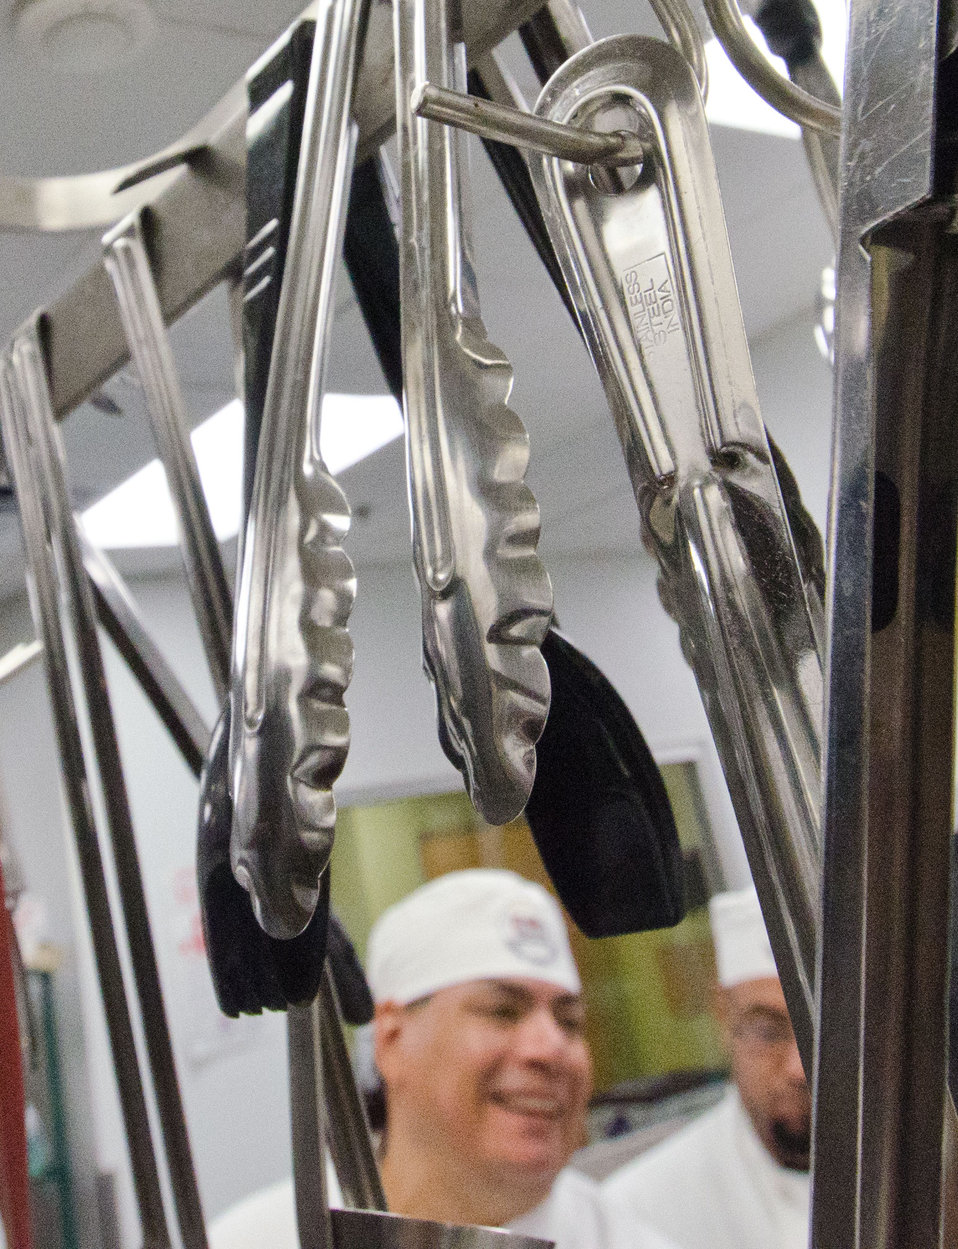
Tools of the culinary trade are clean and ready for use by student chefs Ed Rivas (left) and David Rodriguez (right) at San Antonio Food Bank (SAFB) Community Kitchen in San Antonio, TX, on Monday, October 31, 2011. The Community Kitchen trains the unemployed, feeds the hungry, and generates public support and revenue through social enterprise. Their classroom is seen in the background. Along with catering services, they also prepare meals for the U.S. Department of Agriculture (USDA) Summer Food Service Program feeding children during summer months, and the year-round Child and Adult Care Feeding Program (CACFP). They began creating meals in 2003, with volunteers and the Community Kitchen students looking to further themselves in a promising culinary career. Over the 16-week course individuals receive basic culinary training, similar to portions of an accredited culinary institution, to develop their culinary job skills. The program is lead by Chef Rudy Garza and his team of instructor chefs, present training and work demands that build useful job skills. The students focus their new talents on the preparation of meals for area shelters, kids cafes, summer feeding sites (www.summerfood.usda.gov/), and catering services. San Antonio Food Bank is a non-profit organization that serves as a clearinghouse by receiving and storing truckloads of donated food, produce, and other grocery. SAFB distribute these items to over 500 service agencies that help people in need.
“We couldn’t do what we do without our partnership with USDA’” said President and CEO Eric Cooper. He continues, “We are privileged in partnering (with the USDA) to feeding kids, through the summer, with the Summer Food Service Program, and throughout the year, with the Child and Adult Care Feeding Program (CACFP). Then in our approach to feeding seniors, we partner with USDA in the Commodities Supplemental Food Program (CSFP), and the Senior Farmer’s Market (Nutrition) Program. And then work to bring all our (needy) parties together with our Supplemental Nutrition Assistance Program (SNAP) Outreach. You know, once families have access to food we believe it is important to educate them. Through the support of the SNAP-Education Program we are able to educate them during their time of need. With this comprehensive approach we are really able to get the right food, at the right amount, at the right time, to needy families throughout our community – which allows us to feed the fifty-eight thousand we do, each week.”
SAFB serves 16 counties in Southwest Texas and states, “Nearly one out of every four children and one out of every five adults in Southwest Texas lives in poverty and has difficulty meeting basic nutritional needs.” According to SAFB, sixty-five percent of the people requesting emergency food have children. “Additionally, the senior citizens and those living on a fixed income generally have limited funds for a consistent grocery budget.”
San Antonio is the seventh largest city in the nation with surrounding farms and ranches near its rivers and water supplies. When available they provide fresh surplus produce. Other commodities come from the food industry and manufacturers. The major food brand companies that for various reasons have surplus commodities donate it to SAFB.
The United States Department of Agriculture donates commodities through programs such as The Emergency Food Assistance Program (TEFAP), while Texas farmers supply fresh produce to their Fresh Produce Program.
Public donations come in the form of money, food, volunteer time, and advocacy. Their fleet of trucks to pickup and deliver food as needed.